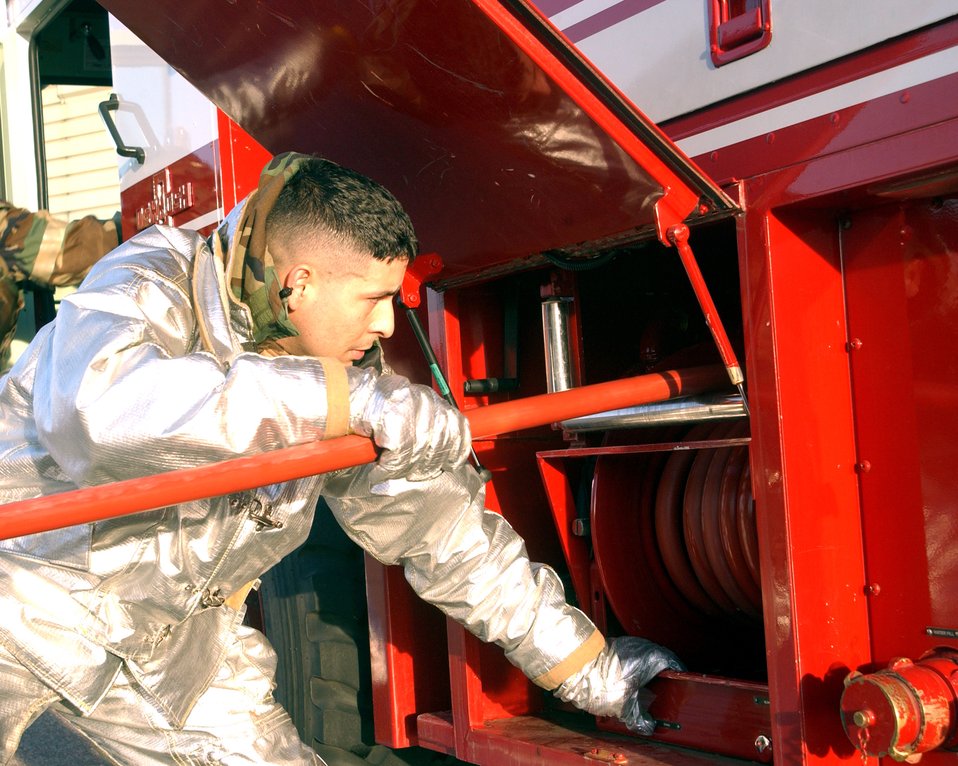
Readiness safeguard

VOLK FIELD AIR NATIONAL GUARD BASE, Wis. -- A firefighter with the Wisconsin Air National Guard's 128th Air Refueling Wing pulls a fire hose from its reel as he prepares to respond to a simulated C-130 Hercules cargo plane crash here recently.